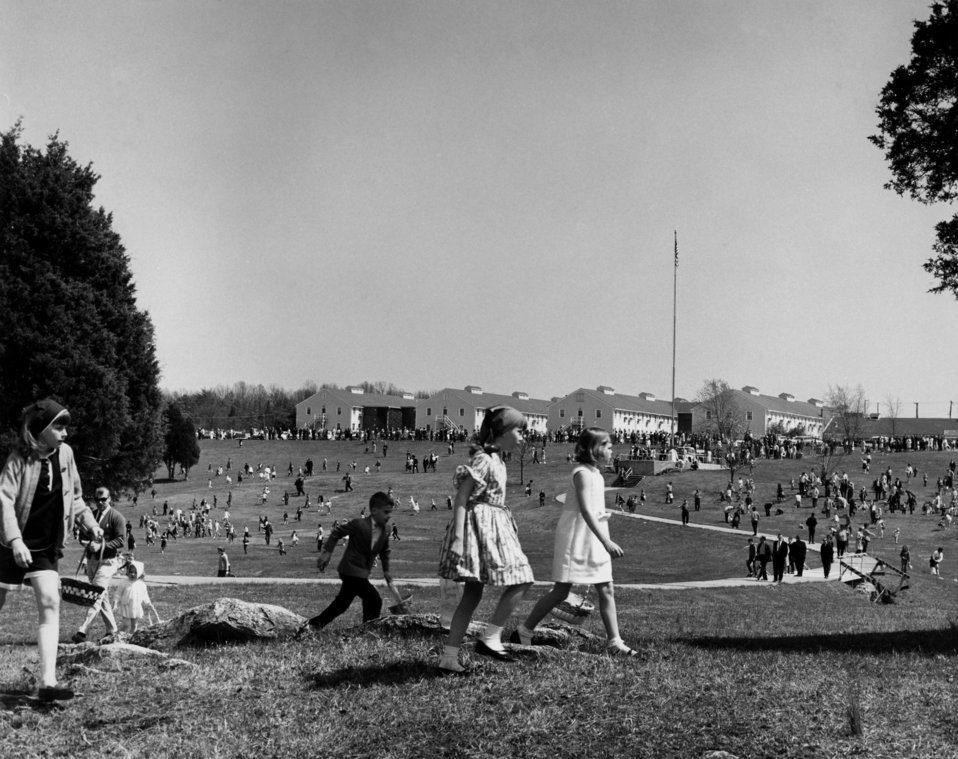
Easter Egg Hunt AEC Bldg. Oak Ridge

AECB DOE photo by Ed Westcott

Easter Egg Hunt AEC Bldg. Oak Ridge Tennessee 4-12-1966